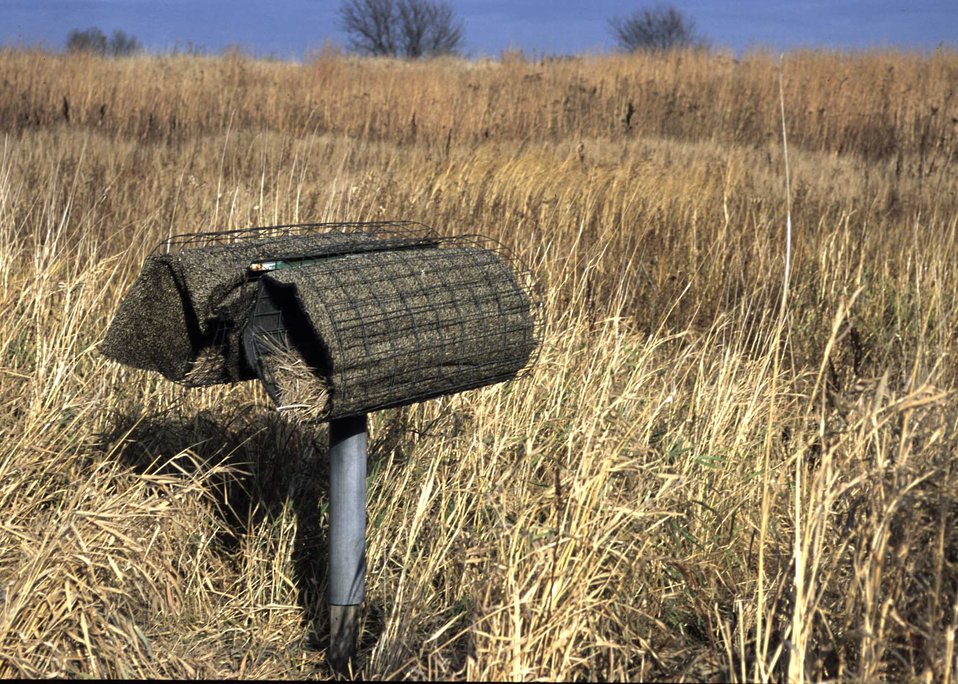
Man-made mallard nest placed in a restored wetland in Kossuth County to aid mallards in nesting success.